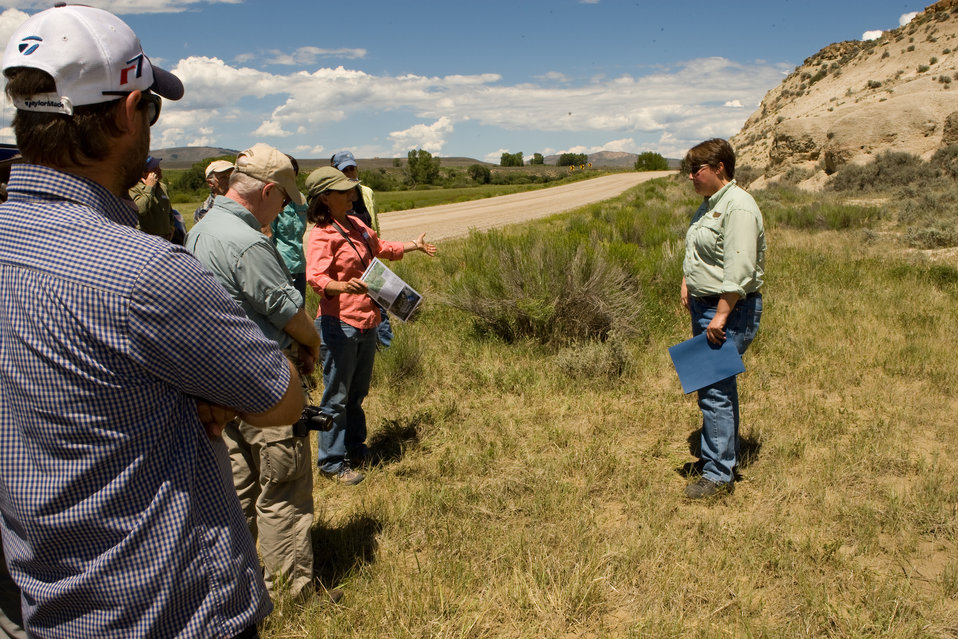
Colorado Rare Plant Conservation Initiative

The Colorado Rare Plant Conservation Initiative (RPCI) is a partnership of 23 statewide and regional agencies, private organizations, and academic institutions working to conserve 121 rare plants in Colorado. As part of these efforts the group developed the Colorado Rare Plant Conservation Strategy, developed Best Management Practices to reduce energy development impacts, addressed climate change, and developed focused strategies for the conservation of individual species at eight priority landscapes. The group has also worked to coordinate volunteer efforts for plant conservation across the state.